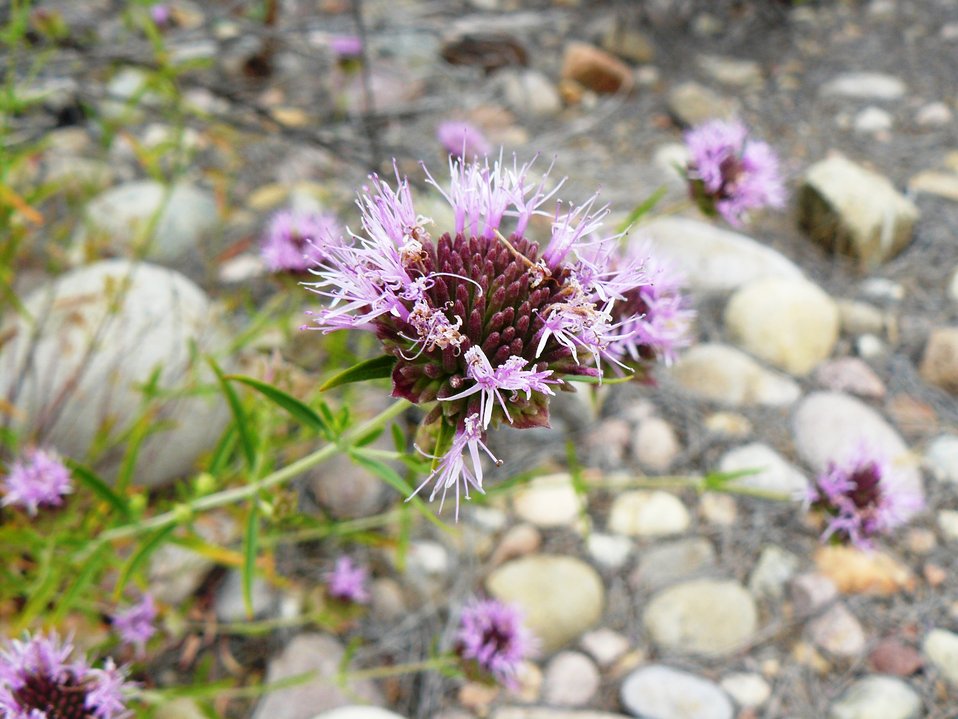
willowy monardella

close up of the pinkish-white flower head of willowy monardella.